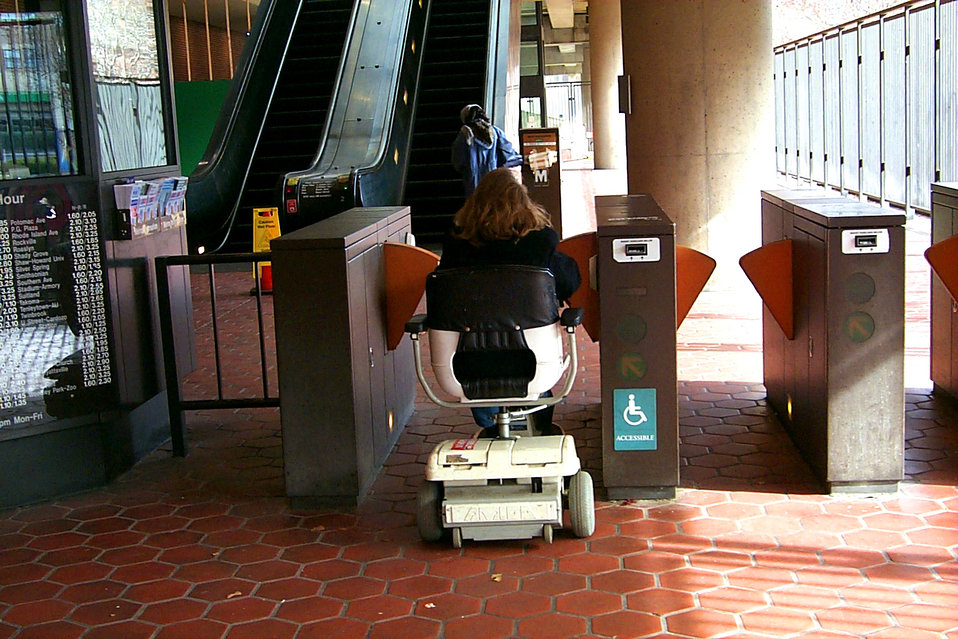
In this 2004 photograph, a motorized scooter-bound woman was in the process of passing through the turnstile portal leading away from the disembarkation point of a mass-transit train station. The wider entryway was necessary, in order to allow for the passage of the wider, wheelchair vehicle, a possible scenario that need be taken into account during the design phase of such a publicly-accessible portal. Other possibilities, which would warrant the need for wider entryways, would include baby carriages or strollers, patrons carrying luggage or parcels, heavyset visitors, and people using other types of mobility aids or guide dogs. See PHIL# 9078 for the same woman exiting the same turnstile.